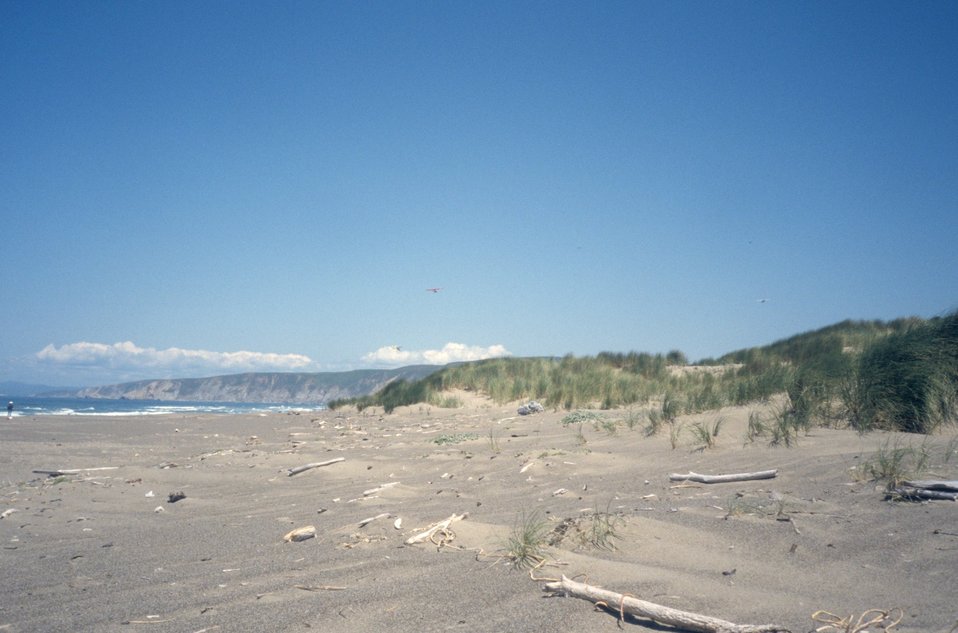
Point Reyes Great Beach. Ultra-ligh aircraft flying over the dunes.